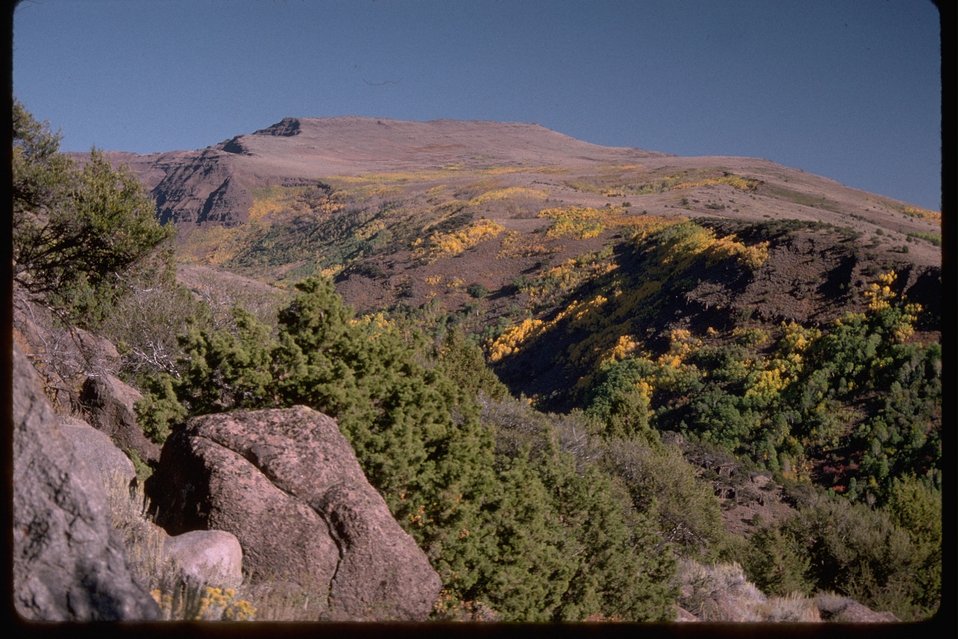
Fall colors at Little Indian Creek Canyon near Steens.